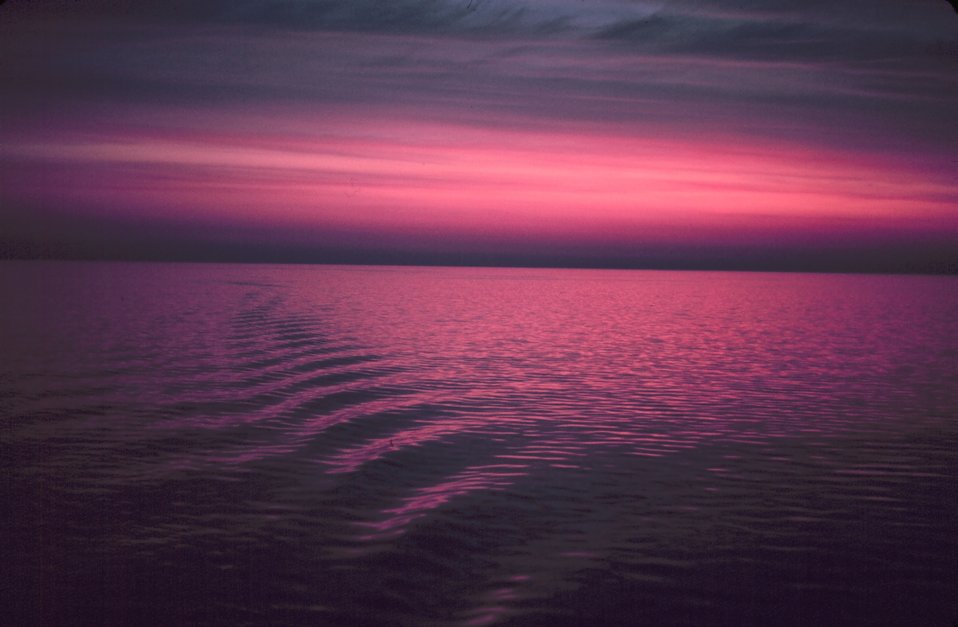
Bands of cloud above, ripples on the sea below. A sunset at sea.